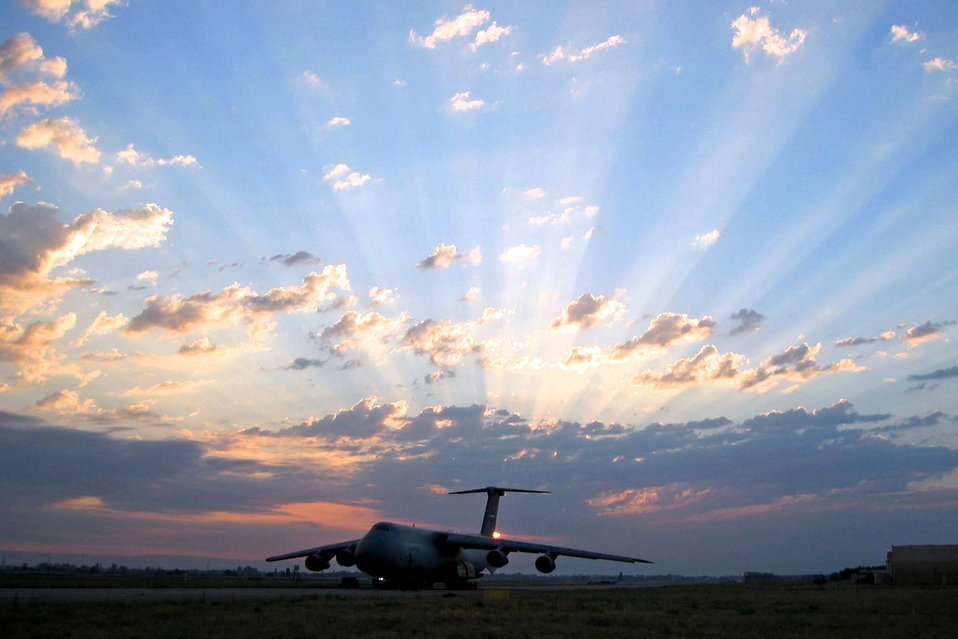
C-5 at Sunset

A C-5 Galaxy from the Air Force Reserve Command's 433rd Airlift Wing is ready to depart a deployed location on another mission supporting Operation Iraqi Freedom.